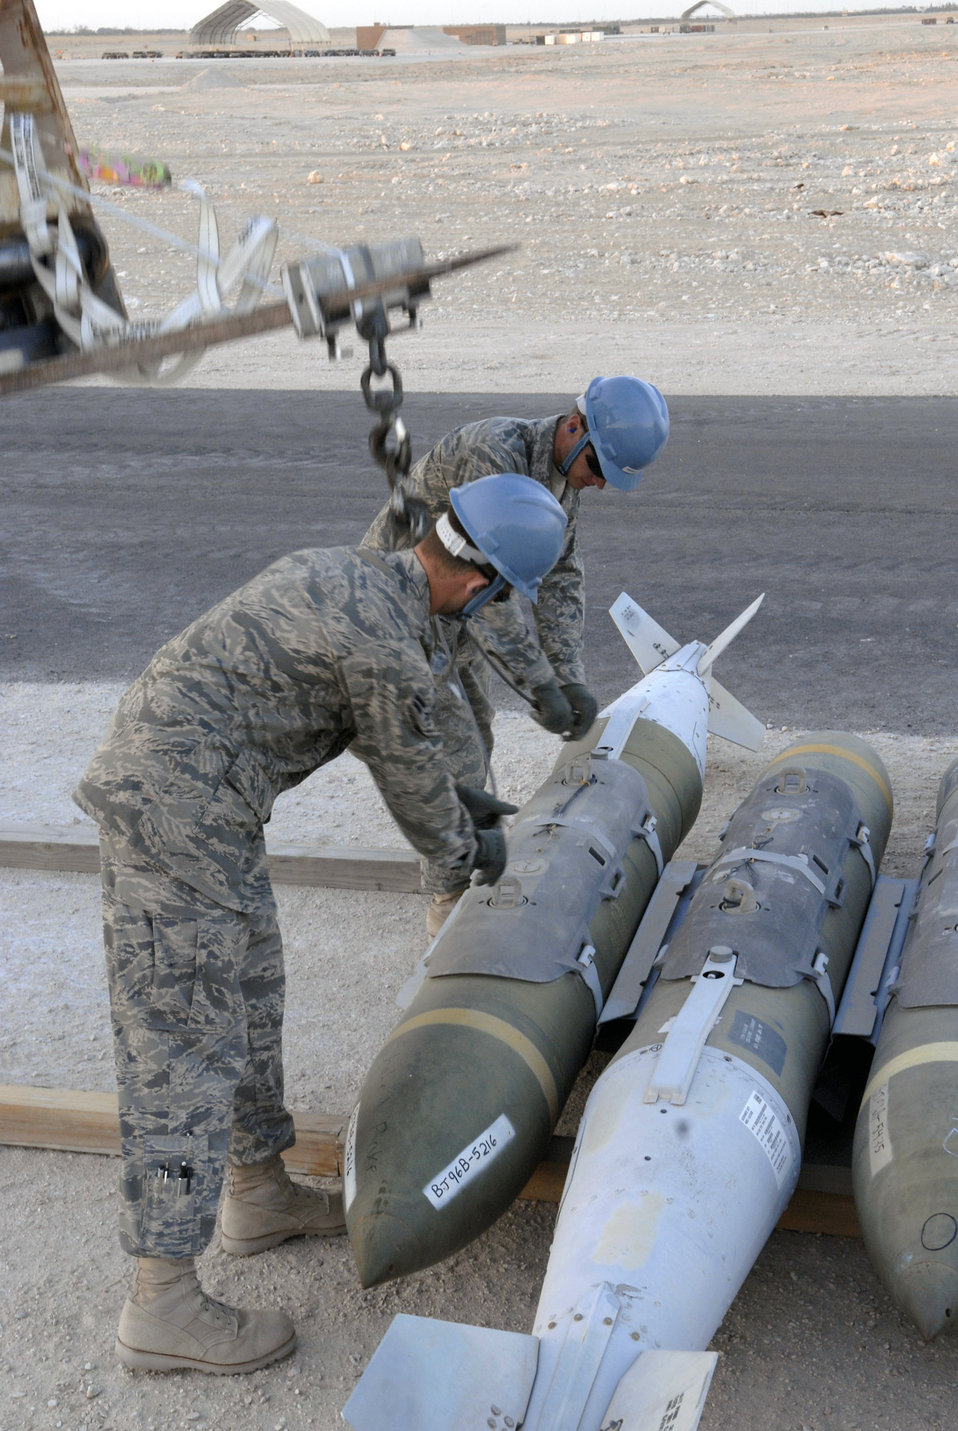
Heavy metal

Airman 1st Class Brian Foster and Airman Bryan Newcomer move guided bomb unit-31s during the annual munitions serviceability inspection Feb. 3 at an air base in Southwest Asia. Airman Foster is a 379th Expeditionary Maintenance Squadron ammunitions systems journeymen from Ellijay, Ga., and Airman Newcomer is a 379th EMXS ammunitions systems apprentice and hails from Suwanee, Ga. Both are deployed from Dyess Air Force Base, Texas.